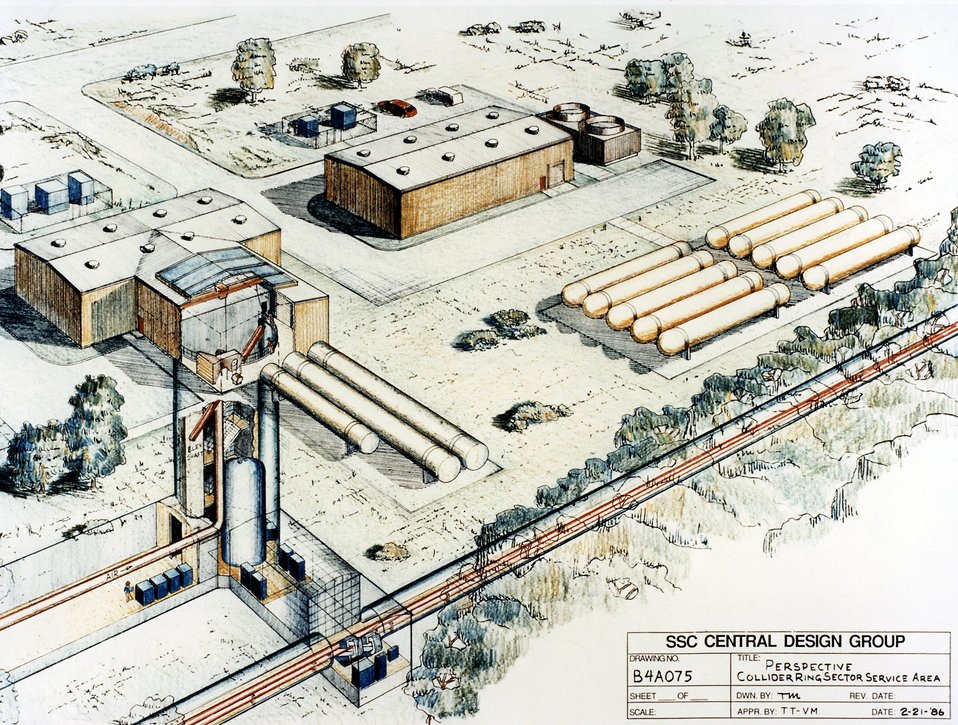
ARTIST'S RENDITION OF THE PERSPECTIVE COLLIDER RING SECTOR SERVICE AREA.

THE SUPERCOLLIDER WILL BE A 54-MILE CIRCUMFERENCE, RACE-TRACK SHAPED TUNNEL THAT IS 12 FEET IN CROSS-SECTION DIAMETER. APPROXIMATELY 10,000 SUPERCONDUCTING MAGNETS WILL FOCUS AND GUIDE TWO BEAMS OF PROTONS IN OPPOSITE DIRECTIONS AROUND THE TUNNEL. THE BEAMS WILL BE BOOSTED TO NEARLY THE SPEED OF LIGHT AND ALLOWED TO COLLIDE HEAD-ON WITH AN ENERGY OF 40 TRILLION ELECTRON VOLTS. THE COLLISIONS WILL CREATE NEW SUBATOMIC PARTICLES THAT WILL BE DETECTED AND ANALYZED. THE SUPERCOLLIDER WILL BE A UNIQUE BASIC RESEARCH TOOL FOR HIGH ENERGY PHYSICS, THE SCIENCE THAT STUDIES THE FUNDAMENTAL NATURE OF MATTER AND ENERGY.